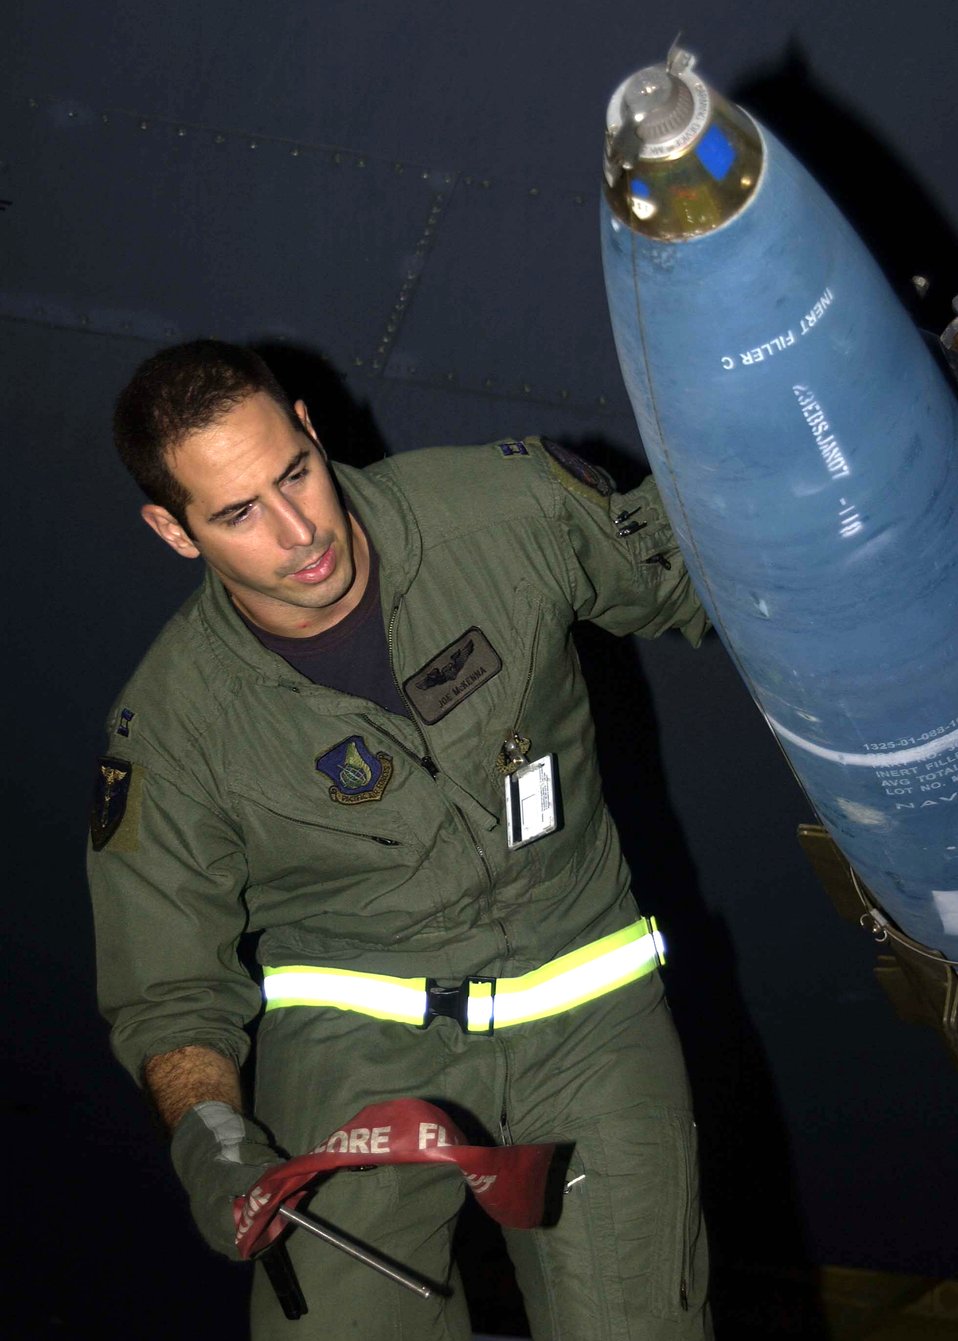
Mine Check

Capt. Joseph McKenna, a B-52 Stratofortress radar navigator assigned to the 23rd Expeditionary Bomb Squadron, checks a Mk-62